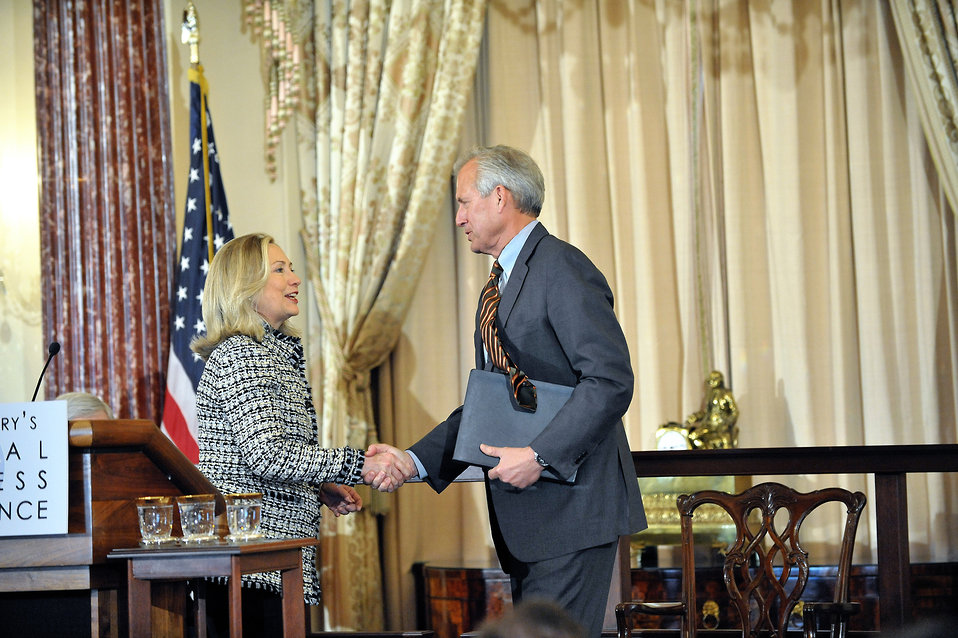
Secretary Clinton Welcomes Boeing Chairman, President, and CEO McNerney, Jr.

U.S. Secretary of State Hillary Rodham Clinton welcomes Boeing Company Chairman, President, and CEO W. James McNerney, Jr. to the first-ever State Department Global Business Conference at the U.S. Department of State in Washington, D.C., on February 21, 2012.